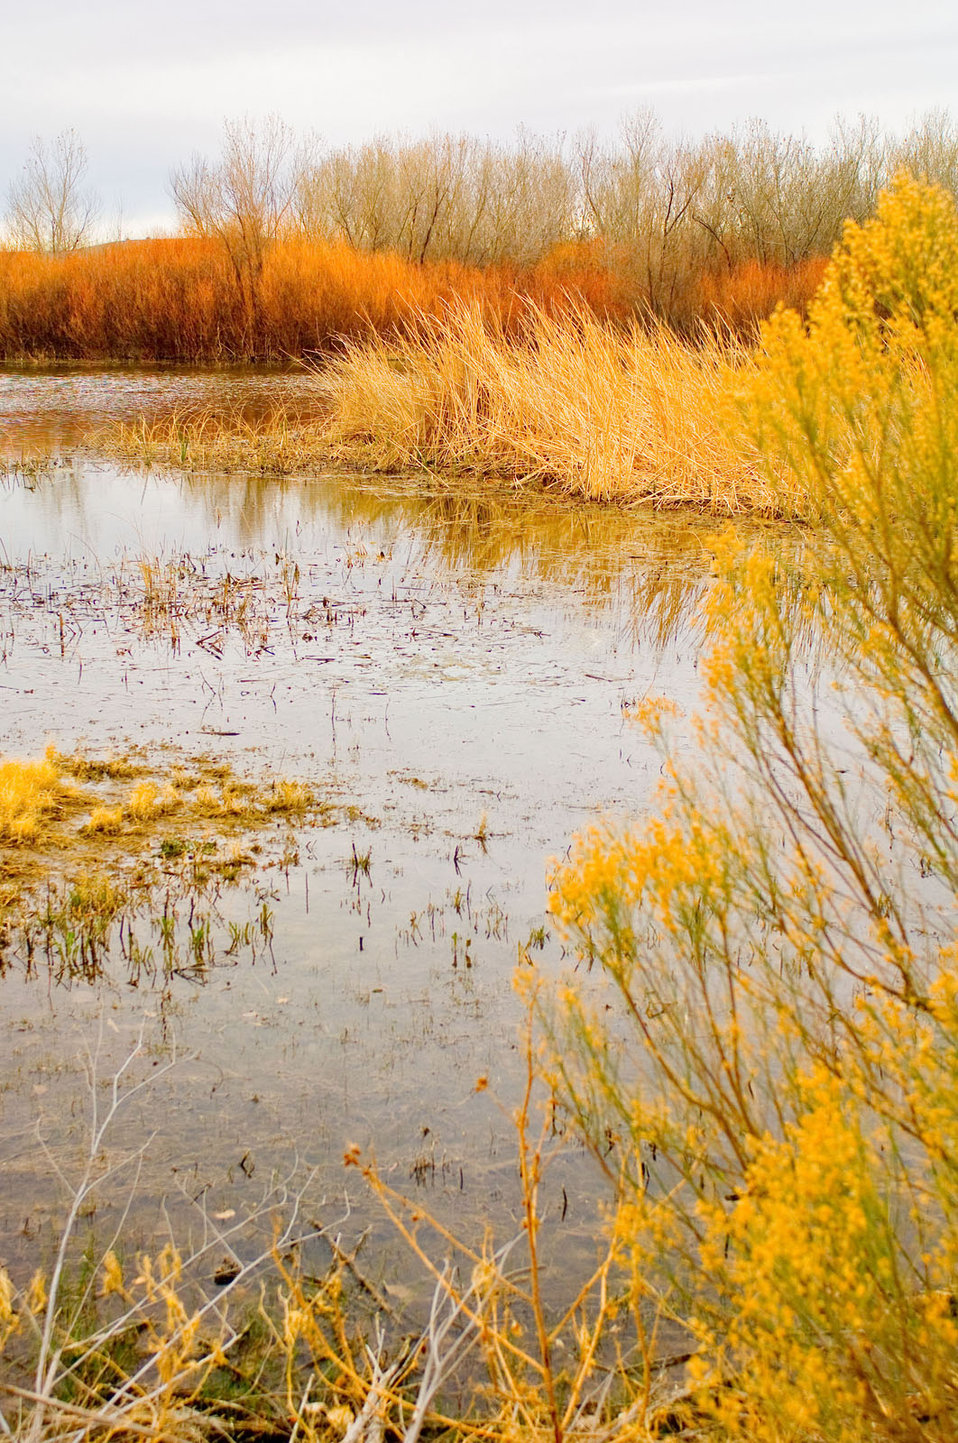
There are many types of wetlands

Wetlands include swamps, marshes and bogs. Wetlands vary widely because of differences in soils, topography, climate, hydrology, water chemistry, vegetation, and other factors.

Wetlands are often found alongside waterways and in flood plains. However, wetlands are found all throughout the landscape. Some, like prairie potholes, form in depressions on the land or over poorly drained soils. While some wetlands have no apparent connection to surface water like rivers, lakes or the ocean, most wetlands have critical groundwater connections.